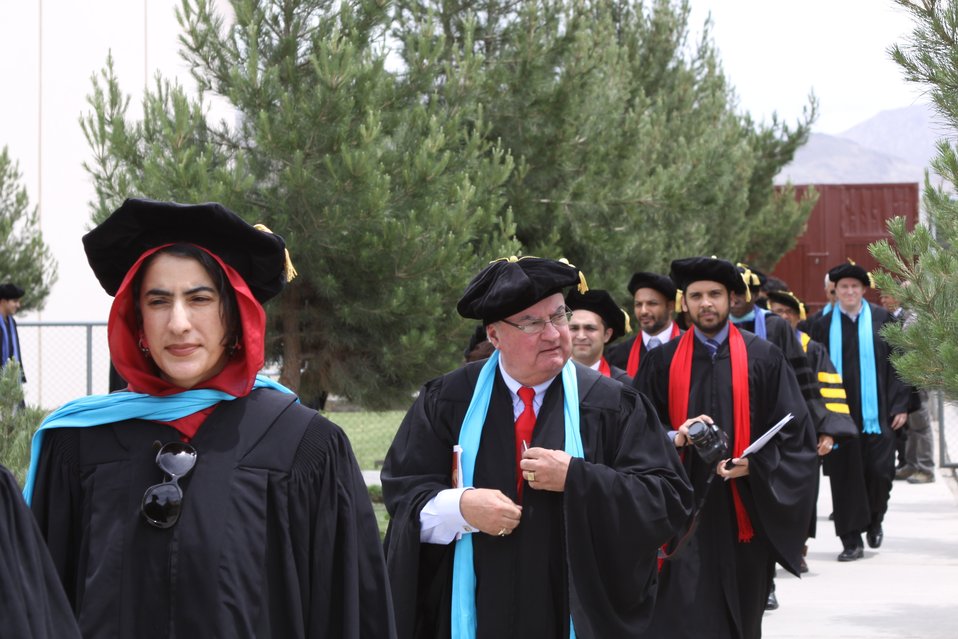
100526 AUAF Graduation 330